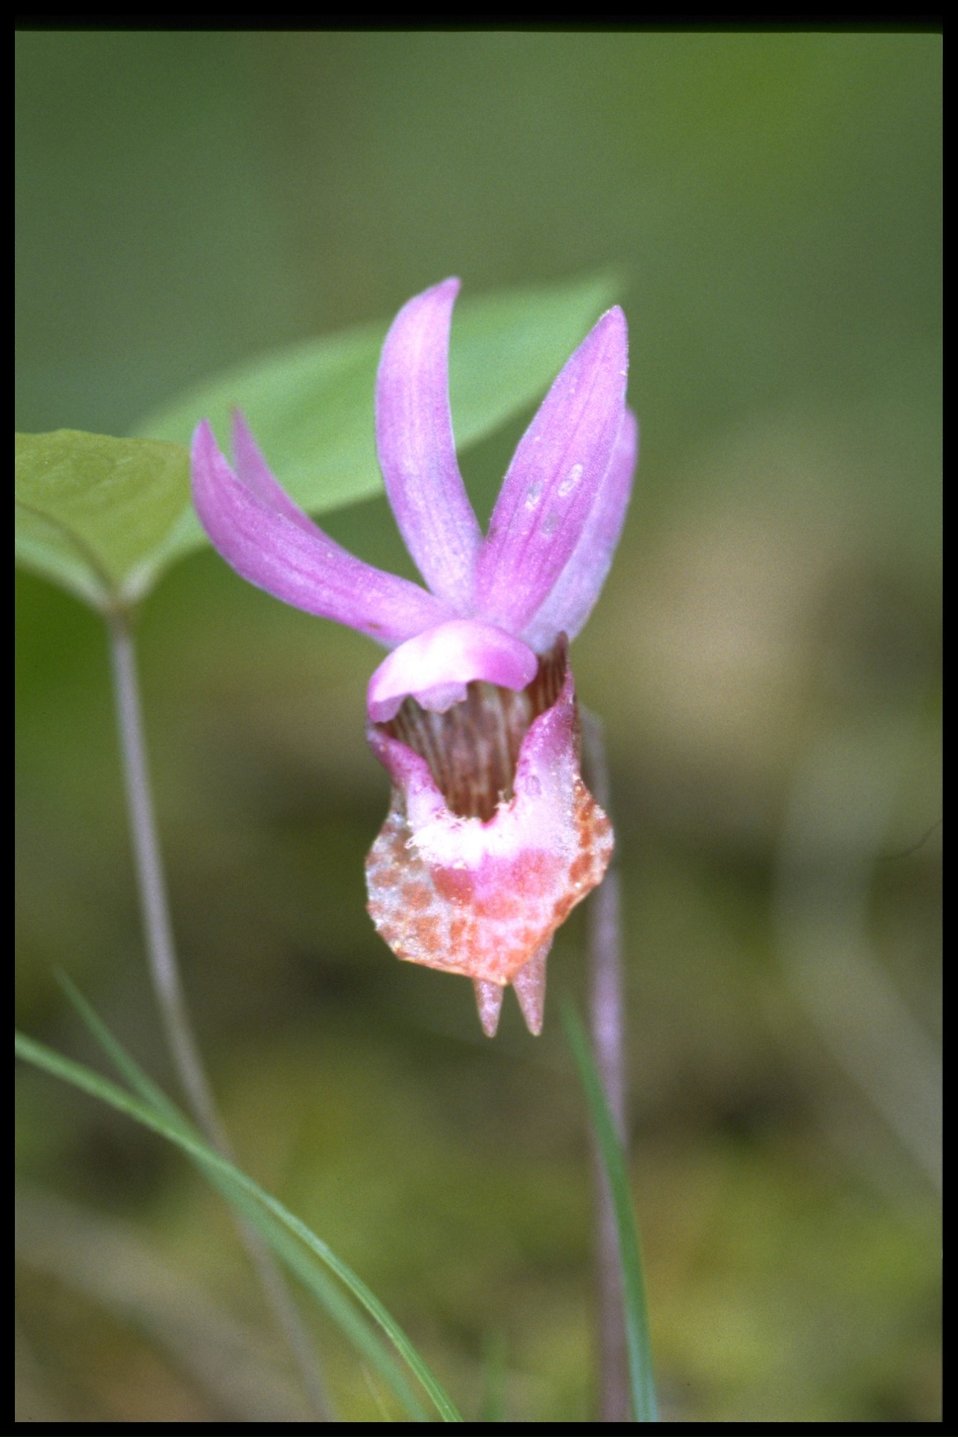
Closeup shot of Calypso bulbosa.